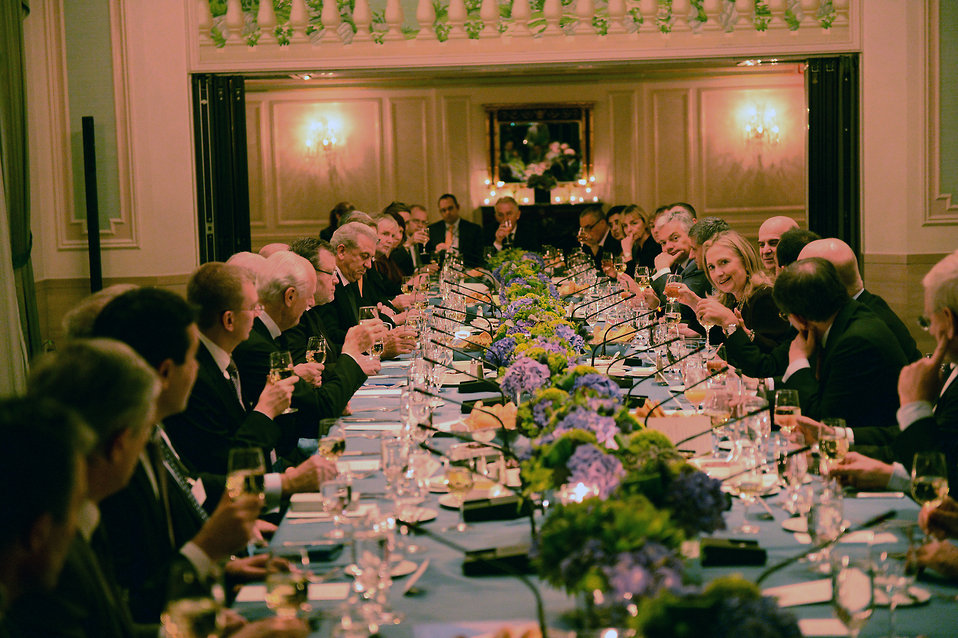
Secretary Clinton Hosts the Trans-Atlantic Dinner

U.S. Secretary of State Hillary Rodham Clinton hosts the Trans-Atlantic Dinner for Foreign Ministers from EU and NATO countries in New York, New York on September 25, 2012.